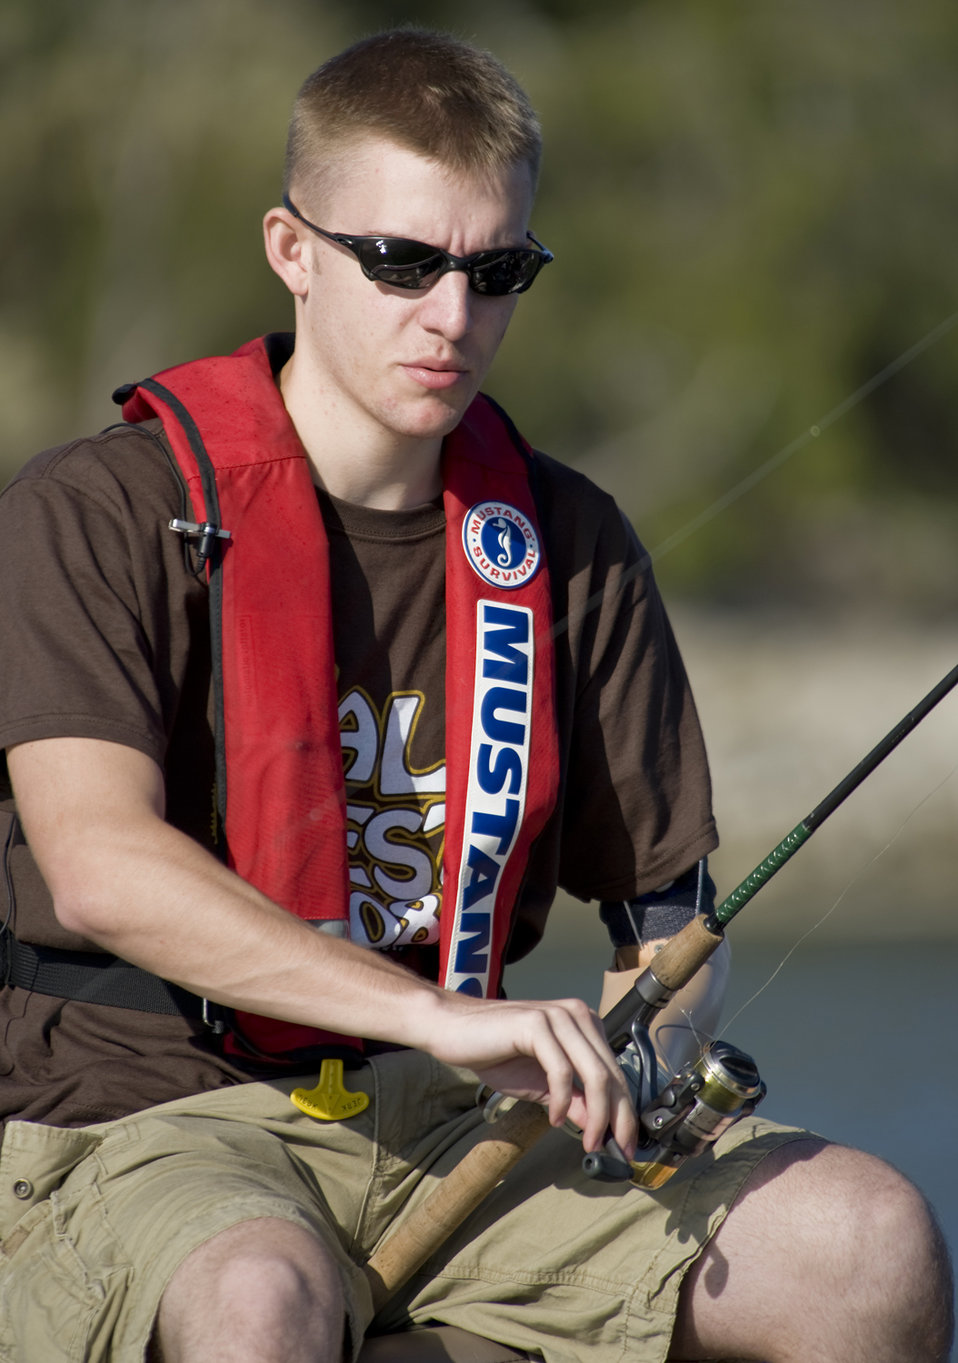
Warrior Care: Injured servicemembers go fishing

Senior Airman Marcus Creason enjoys a day on the lake during Fishing for Freedom V held Oct. 25 at Choke Canyon, Texas. Airman Creason was one of 33 injured servicemembers participating in the event.